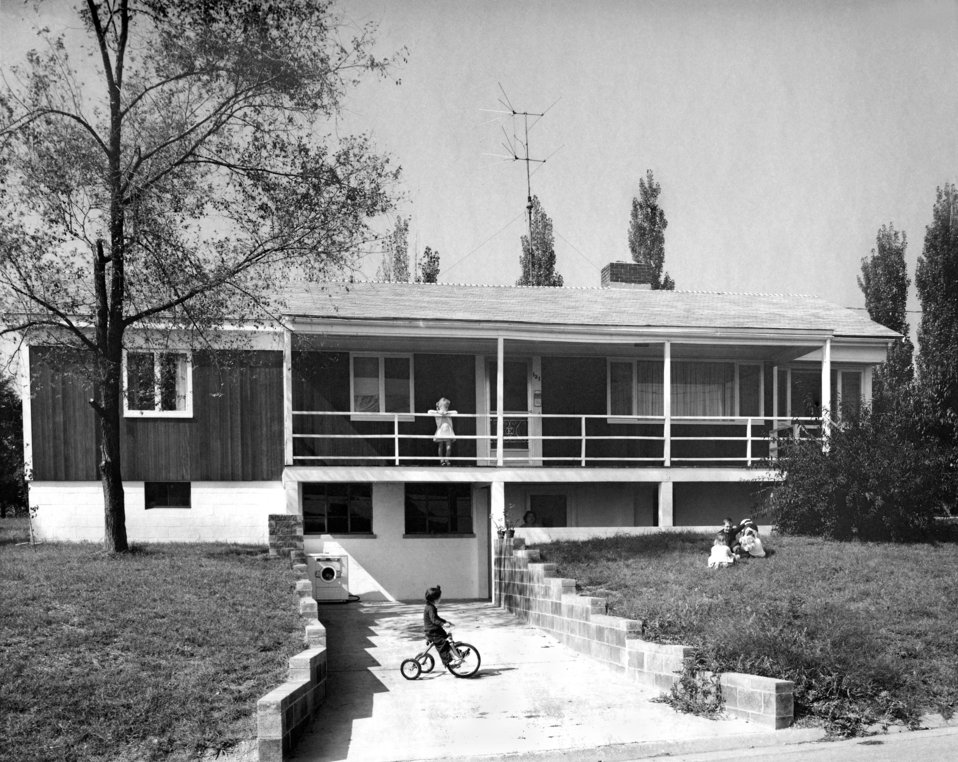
Type B Remodeled Euclid Dr. 1957 Oak Ridge

57-1416 DOE photo E.D. Mitchell 10-10-1957 Oak Ridge Tennessee